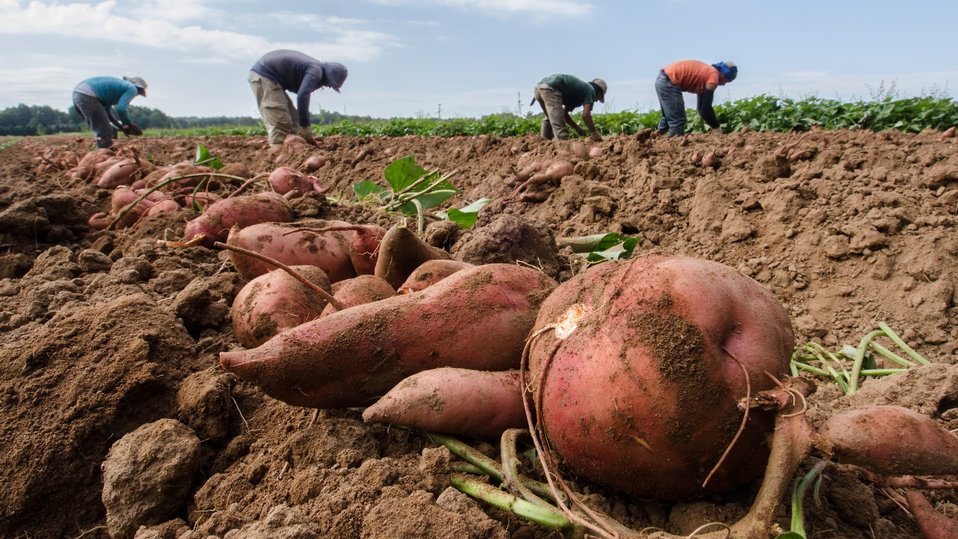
Harvested hand picked large sweet potatoes, at Kirby Farms in Mechanicsville, VA on Friday, Sept. 20, 2013. 200 acres of the farm are devoted to eggplant, spinach, beets, tomato, jalapeno peppers, melons and a variety of greens. Soybeans and small grain are grown on the remaining 300 acres. Using rotational crop practices allows Kirby Farms to double and triple crop yields. Wholesalers, who buy from this farm, sell the produce to major supermarkets in the Mid-Atlantic region, from North Carolina to Maryland. Restaurants in the local area prepare and serve the local bought produce to patrons in the Richmond, VA metropolitan area.